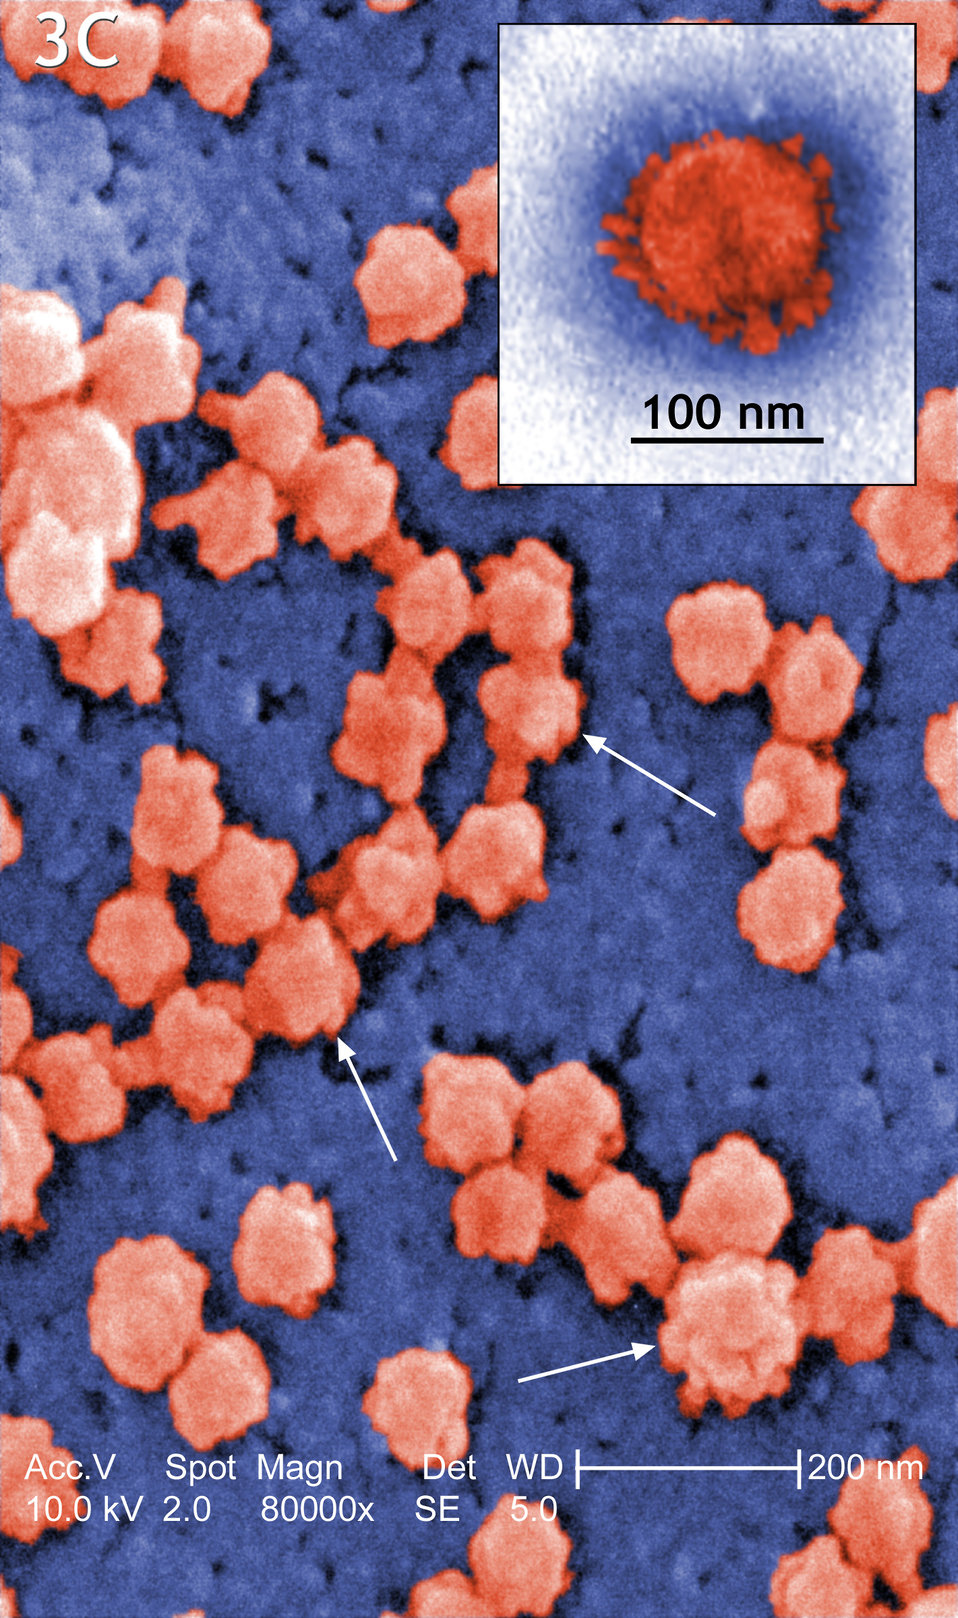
This colorized scanning electron micrograph (SEM) reveals the 'rosettelike' appearance of the matured SARS-CoV (coronavirus) particles (arrows). See PHIL 6400 for a black and white version for this image.